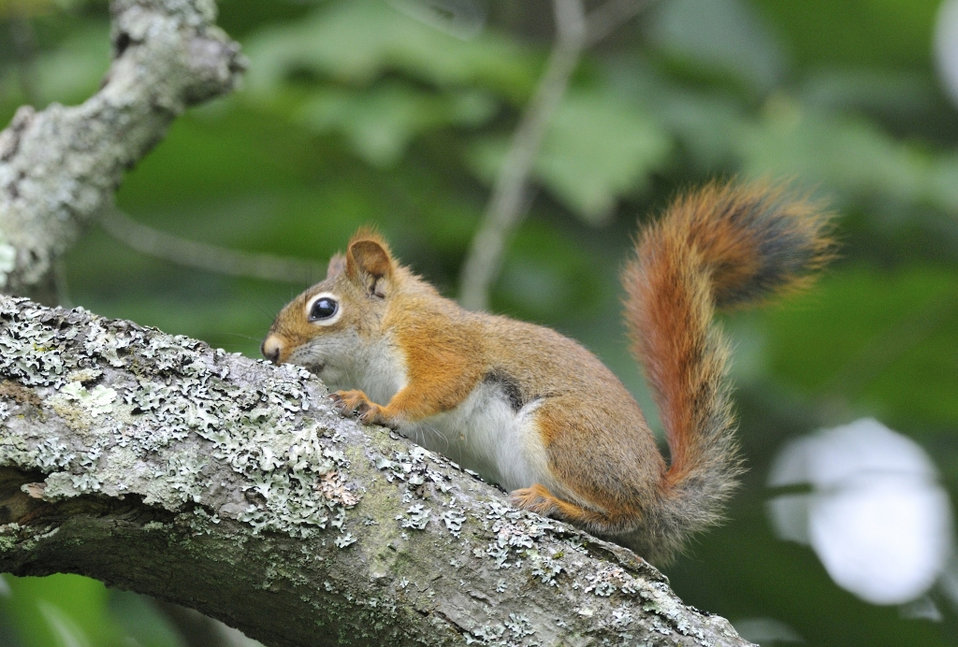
Photo of the Week - American Red Squirrel (MA)

Photo of the Week - 8/5/13

American Red Squirrel photographed at Wentworth Farm Conservation Area in Amherst, MA.